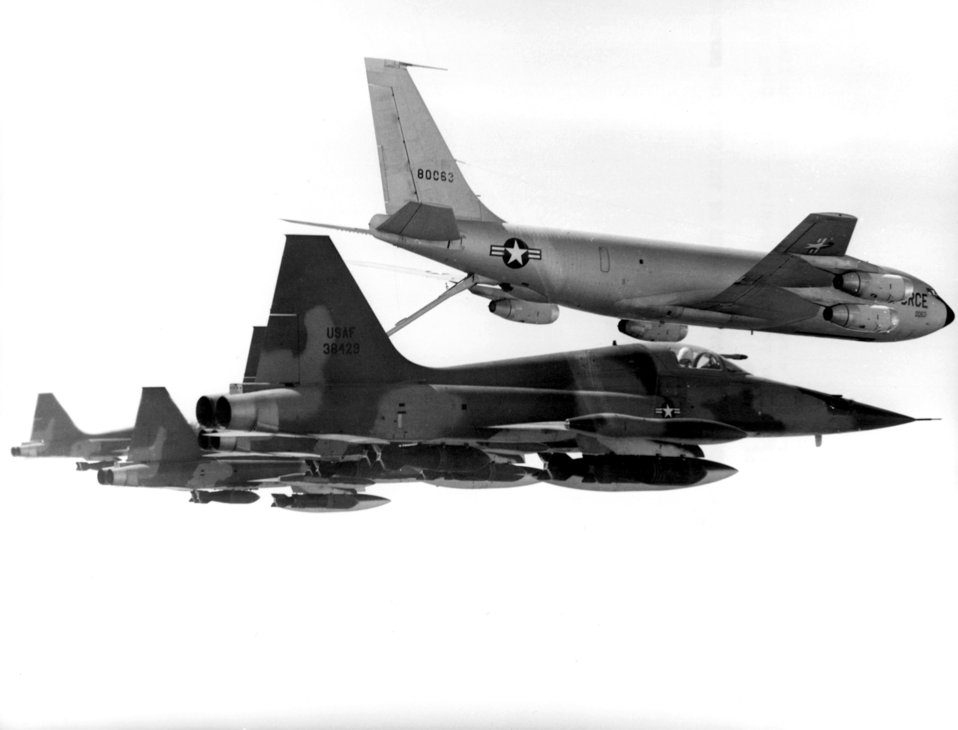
F-5 and KC-135 tanker

1960s -- Bomb-laden F-5 aircraft are shown here refueling from an KC-135 tanker before striking a Viet Cong position in South Vietnam.